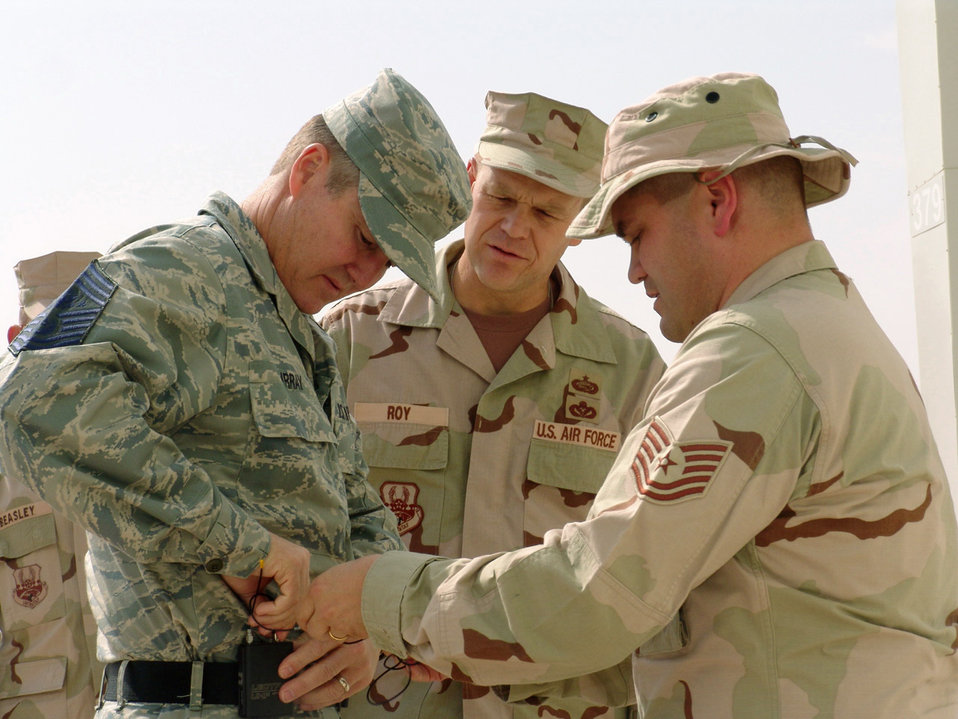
Fashion statement

SOUTHWEST ASIA -- Tech. Sgt. Paul Hughes (from right) and Chief Master Sgt. James Roy help Chief Master Sgt. of the Air Force Gerald R. Murray with his microphone before an enlisted call at a forward-deployed location Nov. 8. Secretary of the Air Force Dr. James G. Roche, Chief of Staff Gen. John P. Jumper and Chief Murray are touring bases in Southwest Asia while wearing the new version of the proposed utility uniform. Sergeant Hughes is assigned to Air Force News Agency's Detachment 4, and Chief Roy is the command chief master sergeant with the 386th Air Expeditionary Wing.